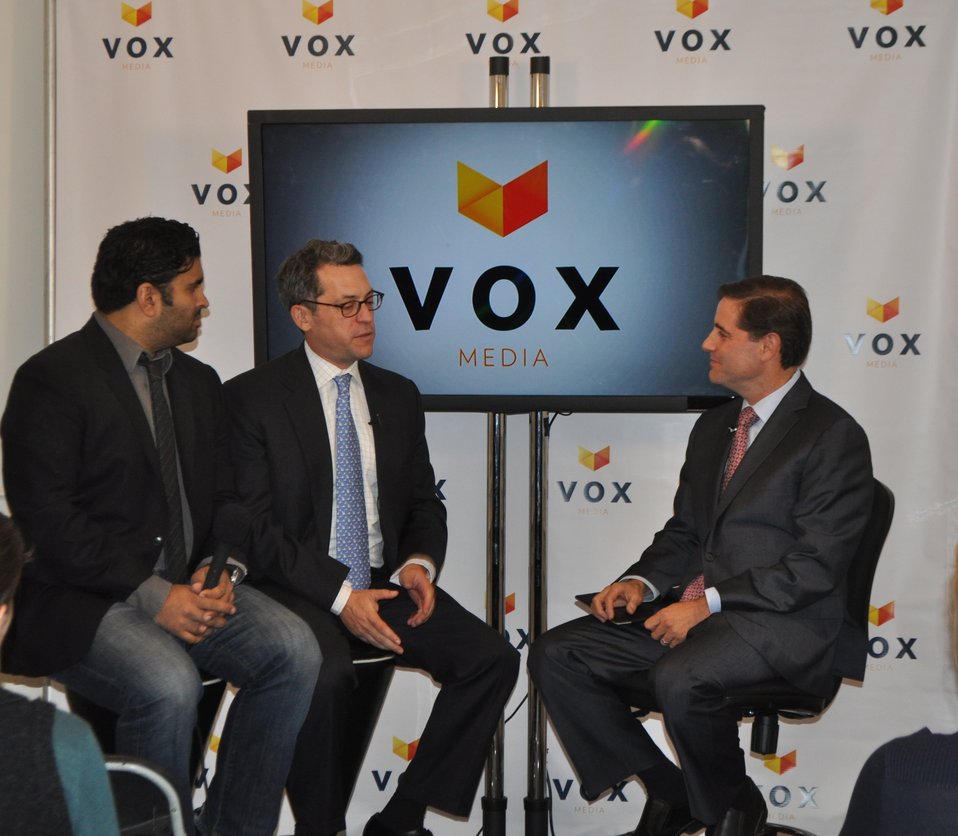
Broadband Challenges and Opportunities, at Vox Media